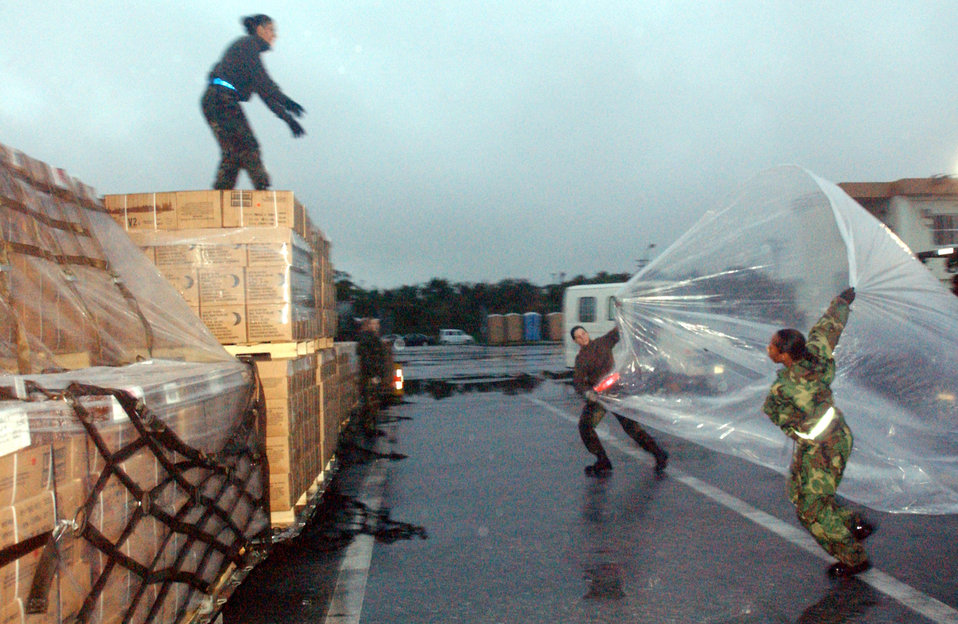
Airmen continue tsunami relief

KADENA AIR BASE, Japan -- Airmen from the 733rd Air Mobility Squadron help cover an aircraft pallet of packaged meals bound for Southeast Asia. Airmen from the 18th Wing here are providing supplies to help with the humanitarian effort for the area devastated by a 9.0 magnitude earthquake Dec. 26 off the coast of Indonesia. The quake caused tsunami waves that killed at least 70,000 people in 12 countries. More than 3,000 cases of packaged meals and four aircraft pallets of fresh water were processed through Kadena's cargo area Dec. 28. Three KC-135 Stratotankers from here also are slated to support relief efforts in Sri Lanka.